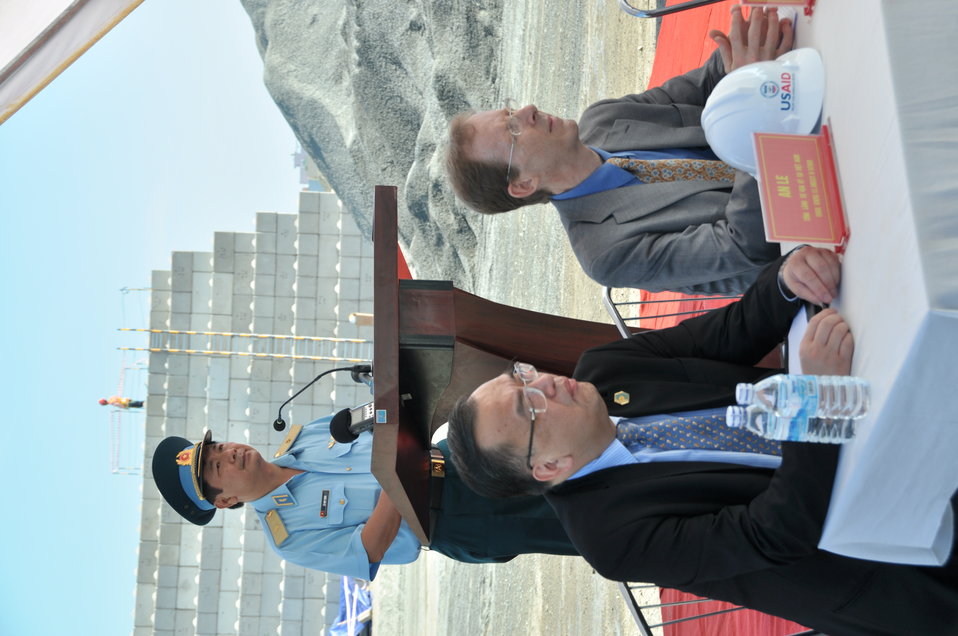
Media Tour of Environmental Remediation of Dioxin Contamination at Danang Airport

Major General Le Huy Vinh addresses the media.

Also pictured, An Le, U.S. Counsel General in Ho Chi Minh City, left, and USAID Mission Director Joakim Parker.

Danang, Vietnam
April 24, 2013